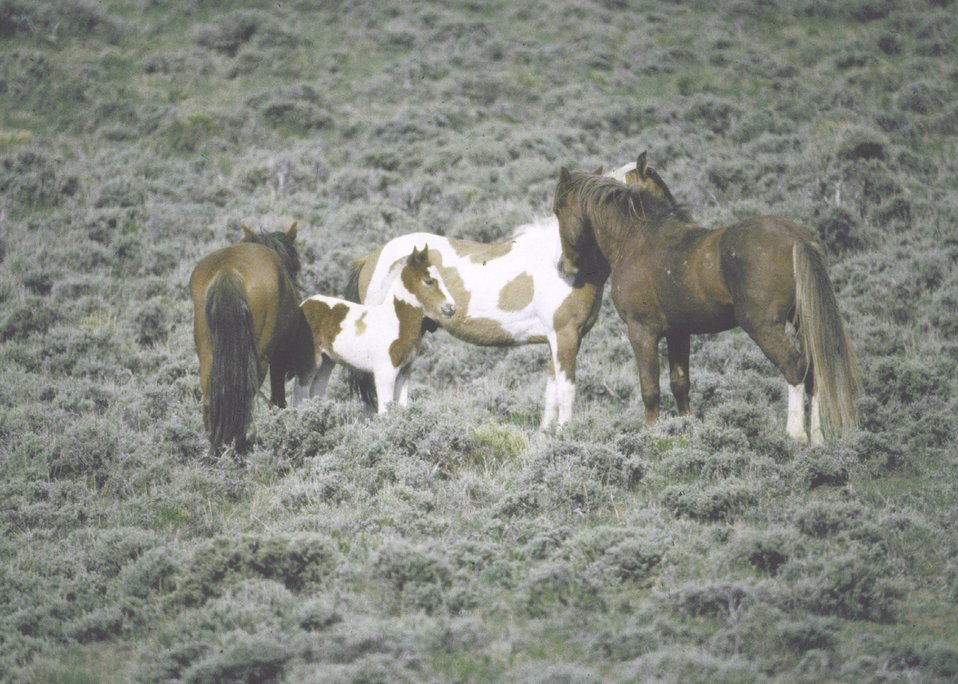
A small group of wild horses on Wyoming's public lands.